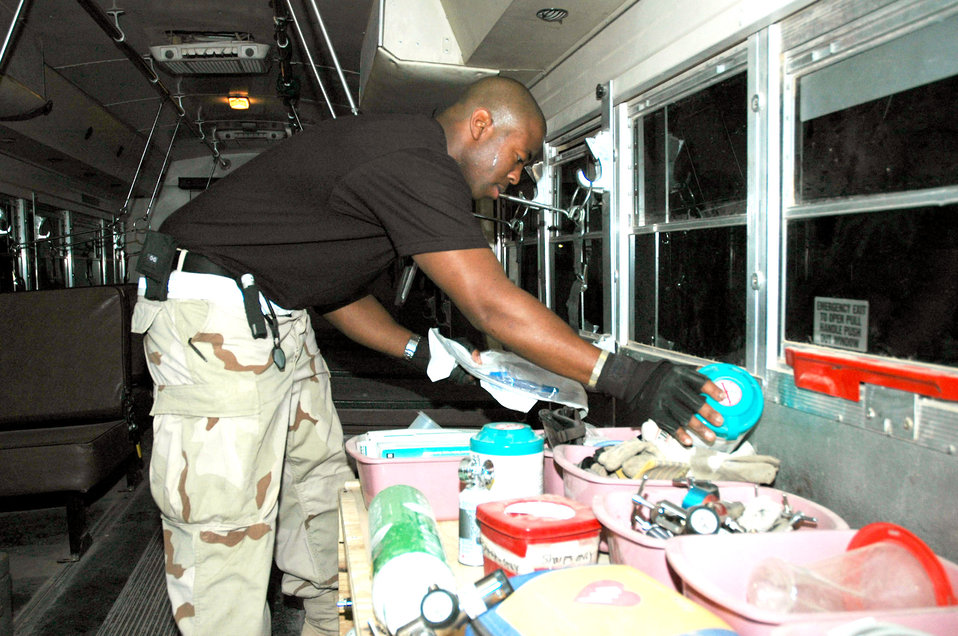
Staging facility takes over where hospital leaves off

BALAD AIR BASE, Iraq -- Senior Airman Richard Reid makes sure an ambulance-type bus is equipped with the necessary medical supplies. The bus has been modified to support ambulatory patients who are primarily moved on stretchers. Airman Reid is a medical technician with the 332nd Expeditionary Medical Group's contingency aeromedical staging facility and is deployed from Andrews Air Force Base, Md.